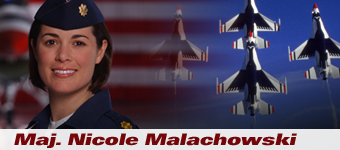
Maj. Nicole Malachowski heritage spotlight graphic .